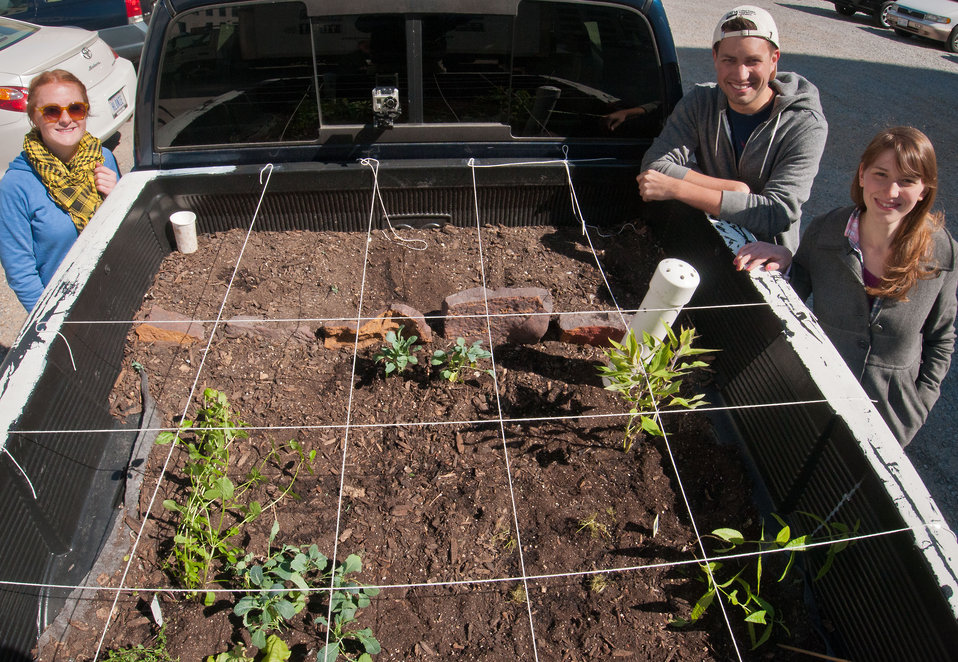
Left to right, D.C. Central Kitchen’s Local Initiatives and Procurement Coordinator Joelle Johnson, The Campus Kitchens Project’s Matt Schnarr, and Nutrition Out Reach Coordinator Lydia Mills after seeds and seedlings have been planted in the Truck Farm truck bed in Washington, D.C. on Friday April 6, 2012. The Truck Farm is a D.C. Central Kitchen and U.S. Department of Agriculture’s People’s Garden Initiative partnership. Like other Truck Farms around the country, this trusty pick-up will travel around the city to schools and community sites, teaching children about healthy eating and where their food comes from through the garden display in its truck-bed. Along with other local donors, the People’s Garden Initiative supports this “edible exhibit” by providing seedlings and educational materials. Ms. Mills and Mr. Schnarr are on staff with D.C. Central Kitchen for one year as part of their AmeriCorps VISTA service.